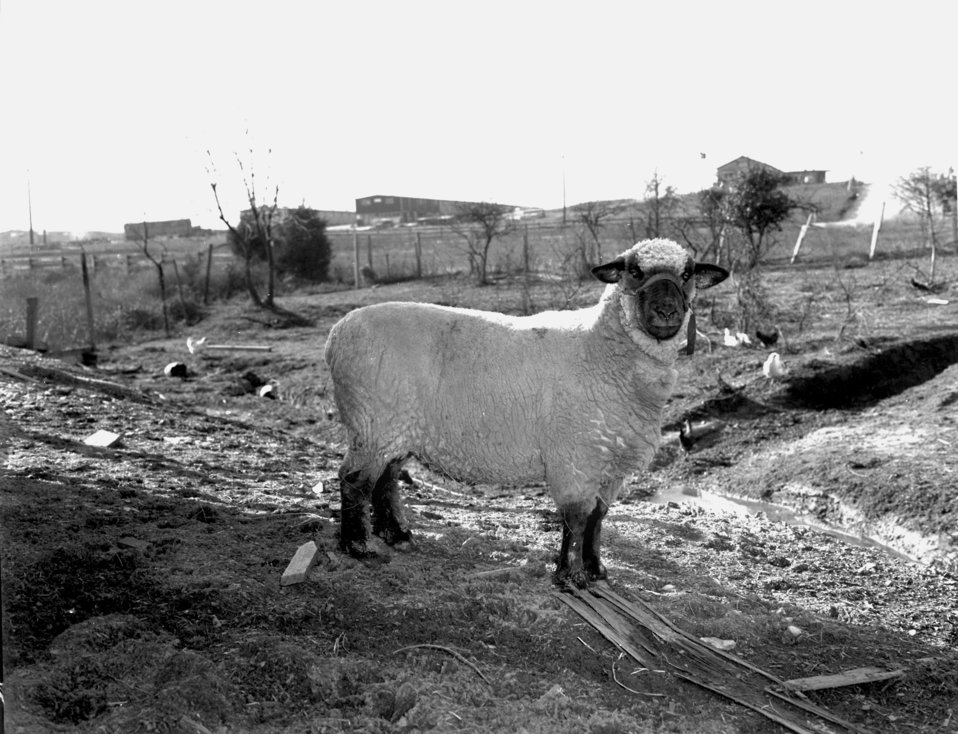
Sheep Oak Ridge

3266-2b DOE photo by Ed Westcott 1-23-1947 Oak Ridge Tennessee